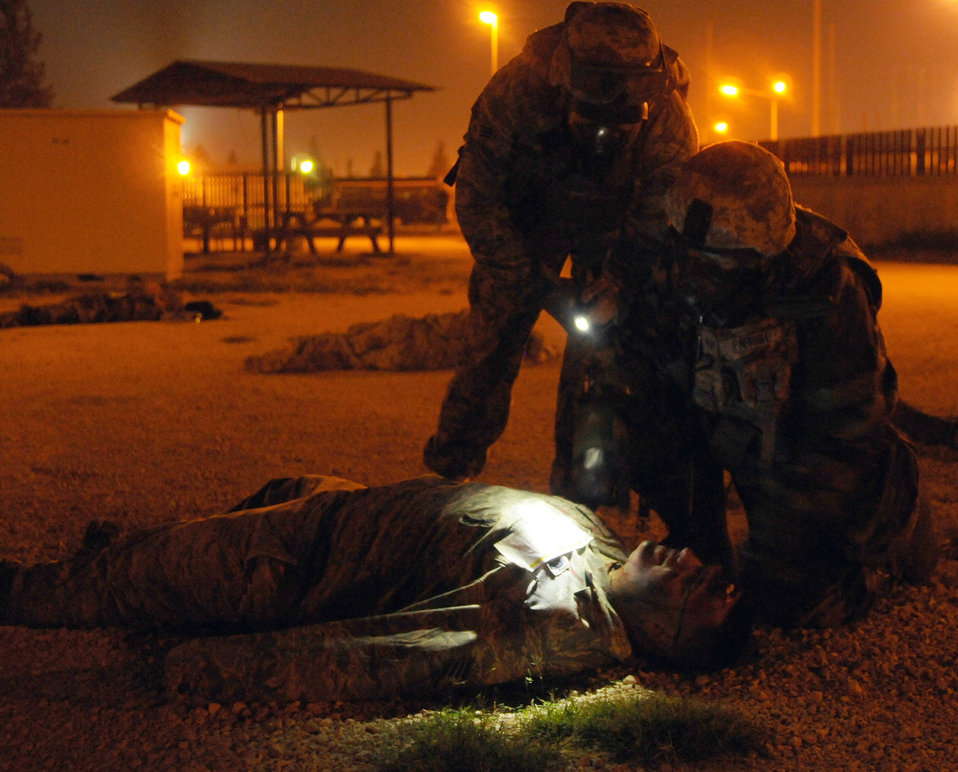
Incirlik's anti-terrorism exercise

First responders check on a